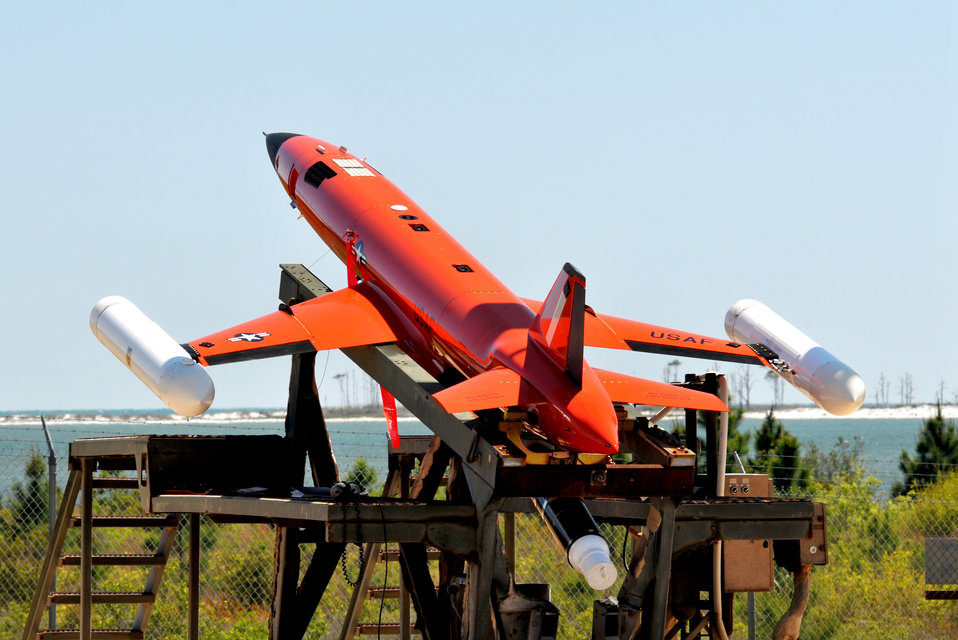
A drone loses again

A BGM167A drone sits on a launcher, preparing to meet its end from an AIM-9 missile fired by an F-15 Eagle pilot from the Massachusetts Air National Guard’s 104th Fighter Wing. The drone serves as a primary target for the F-15 pilots who are participating in Exercise Combat Archer during the Weapons System Evaluation Program at Tyndall Air Force Base, Fla. The exercise allows pilots and maintainers valuable training in the employment of live air-to-air munitions and tests the capabilities of the weapon system.